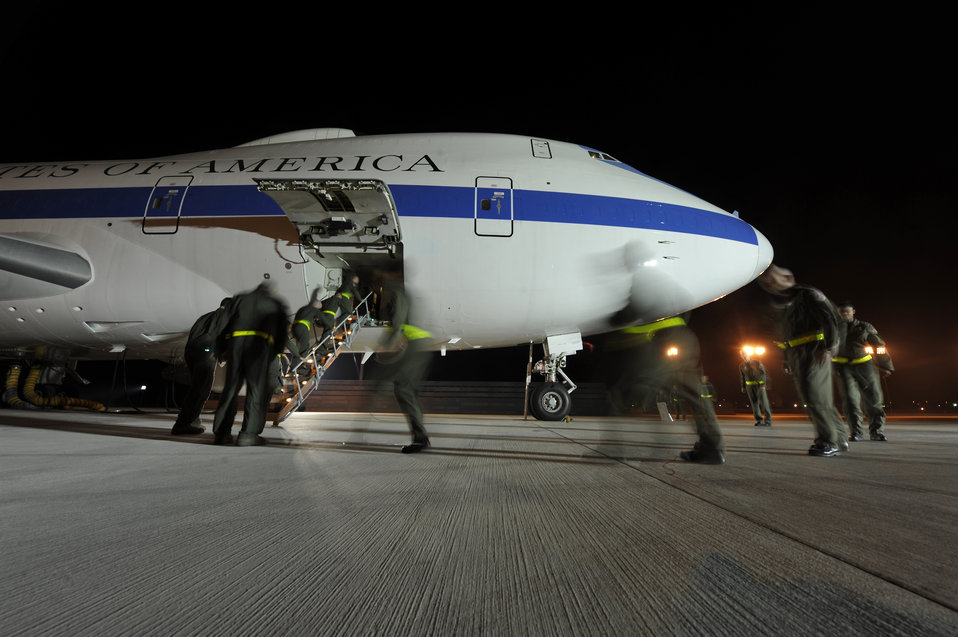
E-4B milestone

An aircrew from the 1st Airborne Command and Control Squadron board an E-4B at Offutt Air Force Base, Neb., during a simulated alert mission. The E-4B serves as the National Airborne Operations Center for the president, secretary of defense and chairman of the Joint Chiefs of Staff. The aircraft passed a significant milestone this month by sitting alert constantly for more than 35 years.